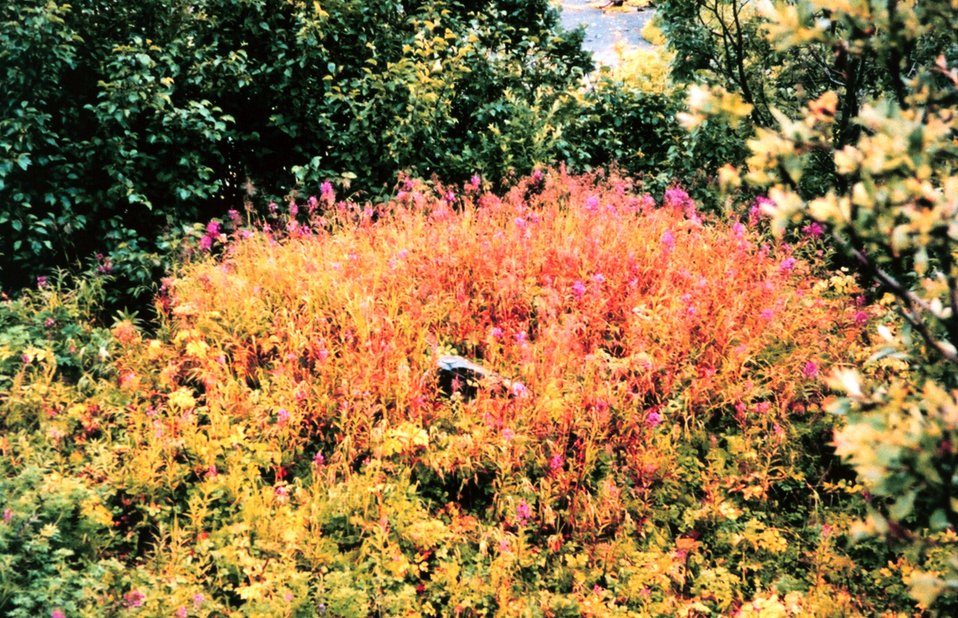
Beautiful stand of wild flowers